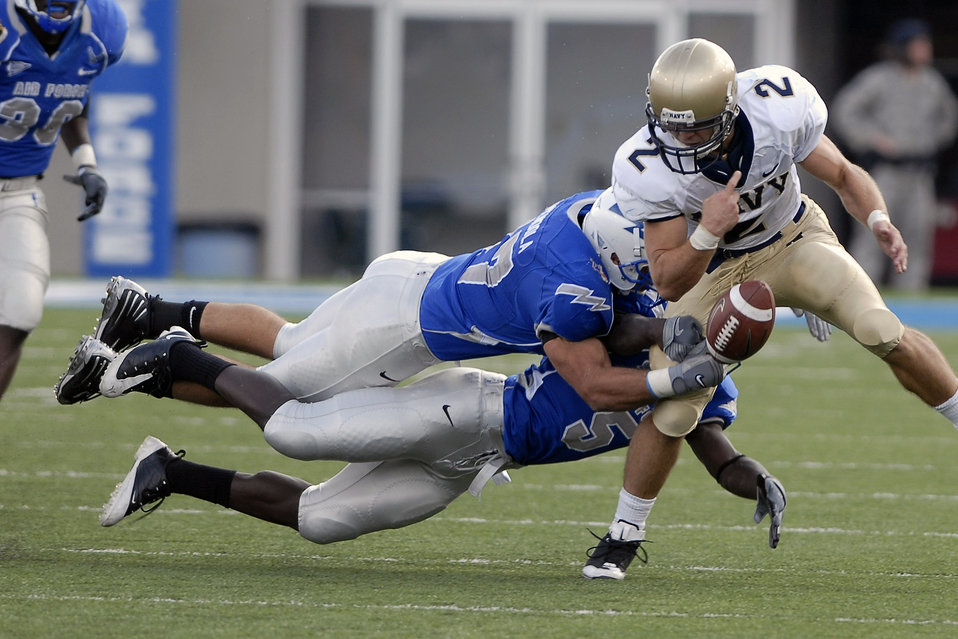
Football: Navy holds off Falcons

Navy quarterback Jarod Bryant loses the ball to the Falcon defense as Navy beat the Falcons 33-27 at the Academy in Colorado Oct. 4.